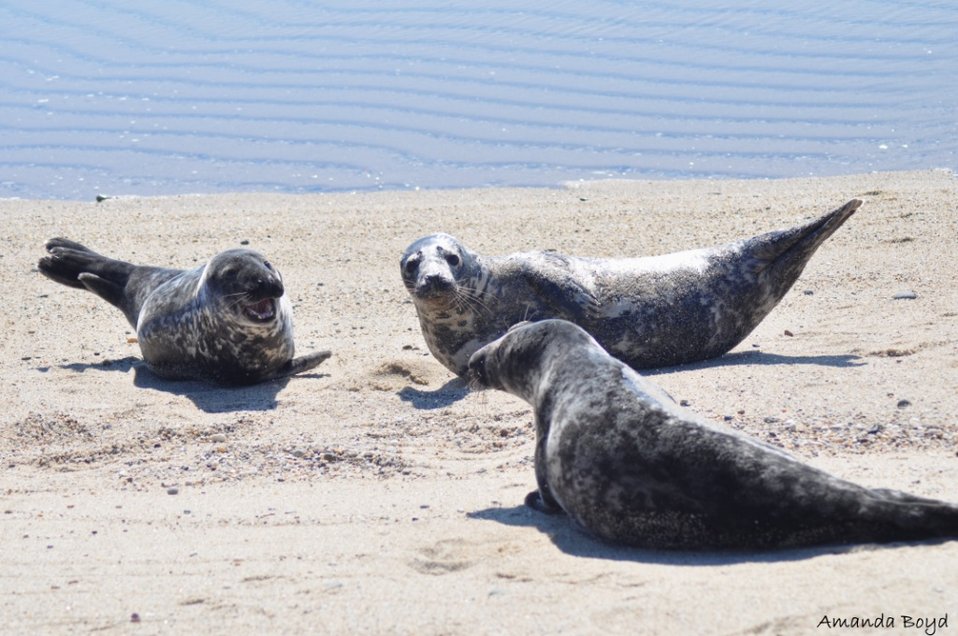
seal trio

Nantucket National Wildlife Refuge